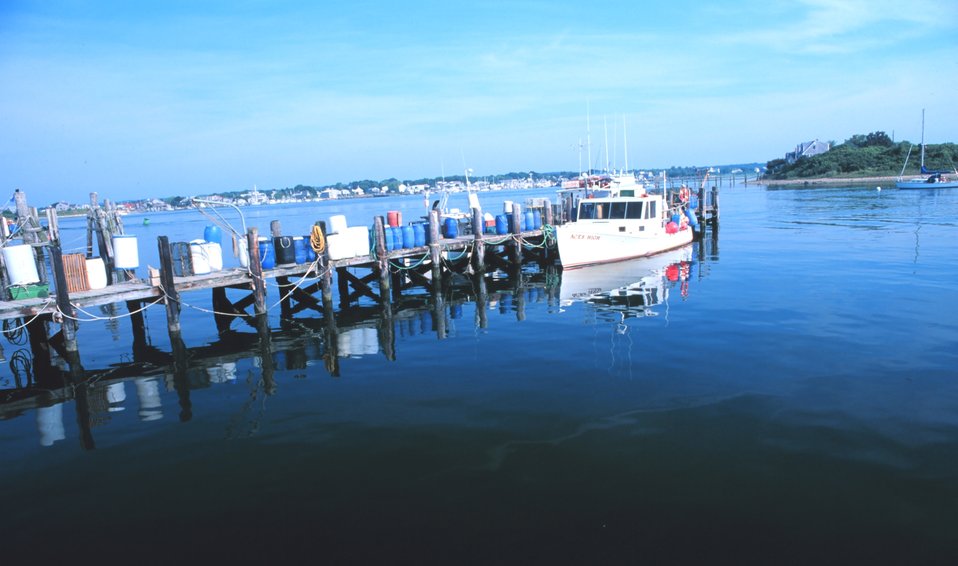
The Fishing Vessel ACES HIGH in port, a coastal lobster boat